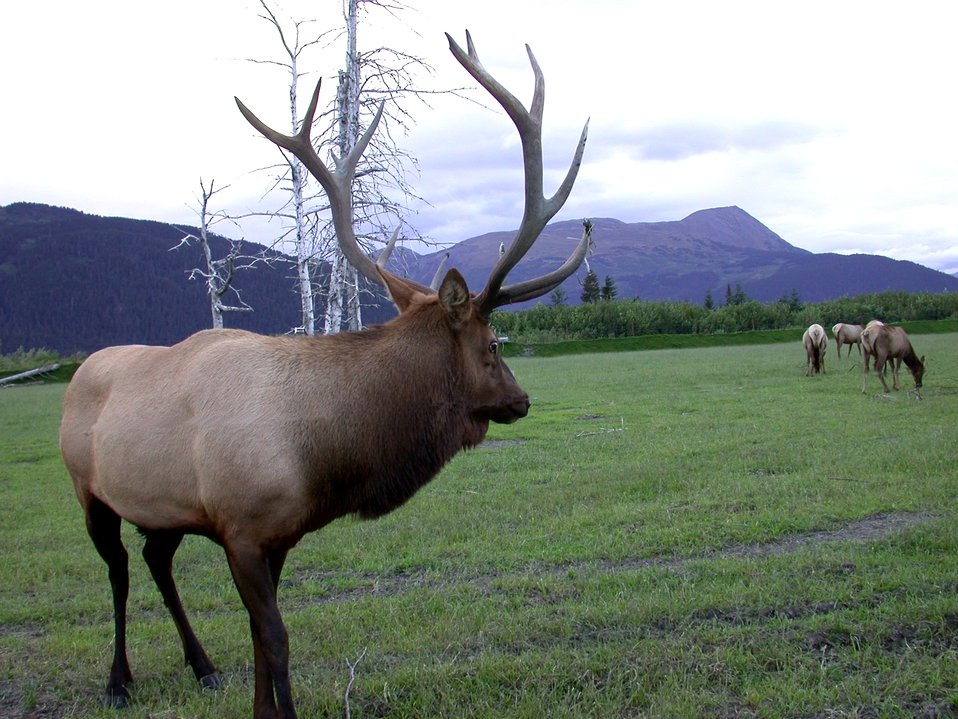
Bull elk on preserve inland from Anchorage.